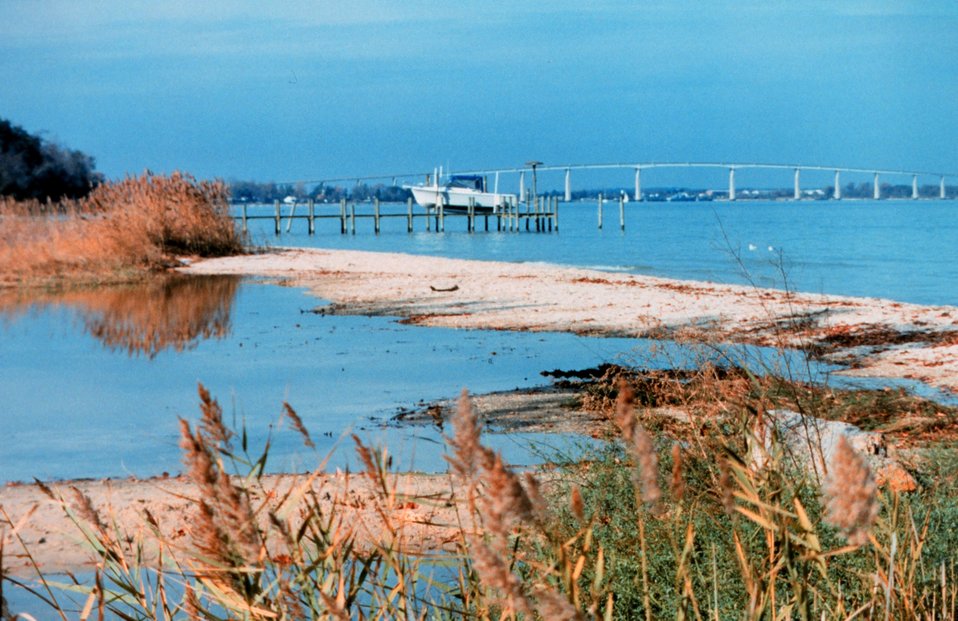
Mouth of a tidal pond has been closed up by a series of storms and high tides